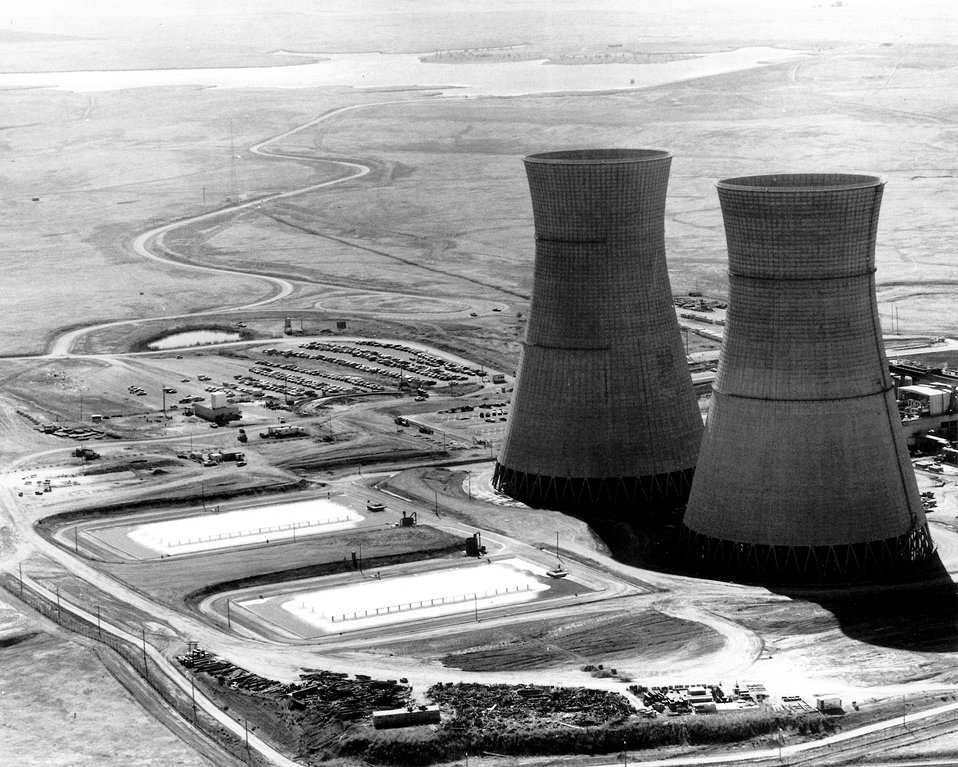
These twin hyperbolic cooling towers, 43 stories tall, are an integral part of the plant developed by the Bechtel Corporation at the 913-Mwe. Rancho Seco Nuclear Station in California. Circa 1974.